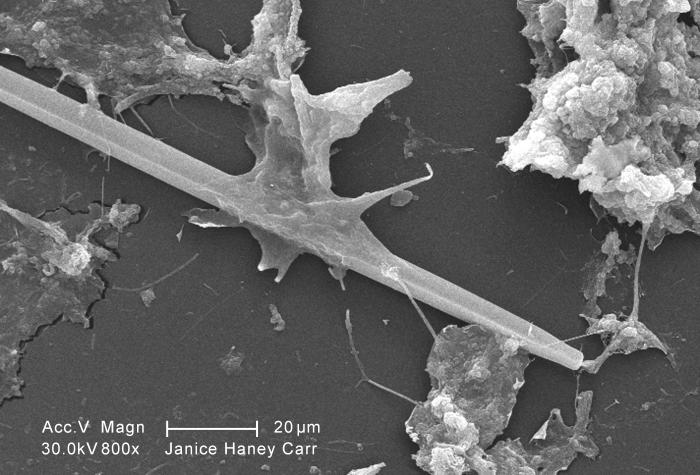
This scanning electron micrograph (SEM) of an untreated water specimen extracted from a wild stream mainly used to control flooding during inclement weather, revealed the presence of unidentified organisms, which included bacteria, protozoa, and algae. In this particular image, a needle-shaped structure appeared to be caught up in an amorphous gelatinous biofilm, which though unidentified, appeared to be the green algae, Ankistrodesmus. See PHIL 11697 for a colorized version of this image.